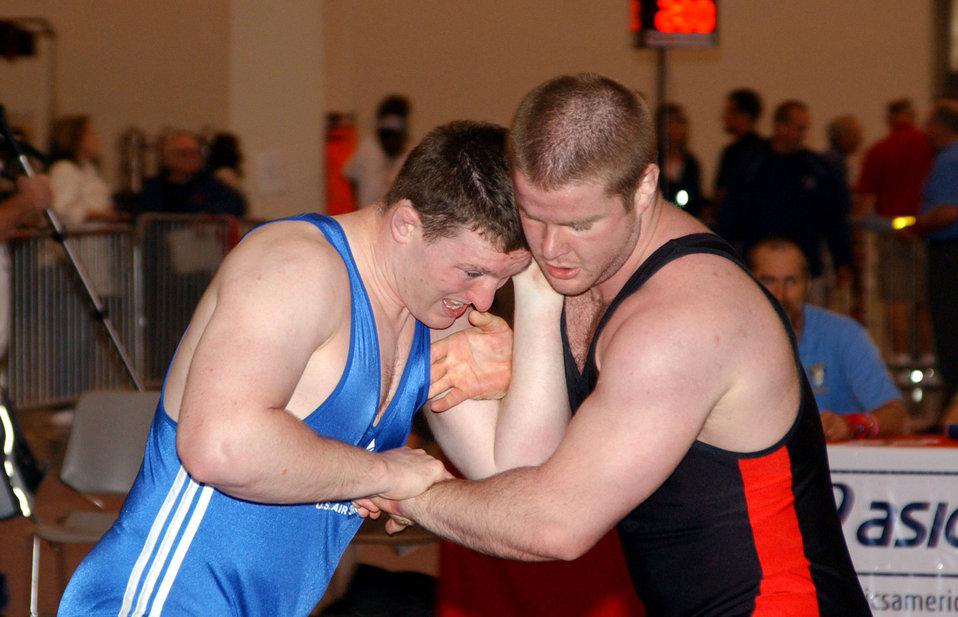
Airmen earn silver, bronze in wrestling championship

Brenden Mclean (left) matches up against Justin Ruiz in a Greco-Roman style match during the U.S. Wrestling Nationals April 7 in Las Vegas. In McLean's first time wrestling for the Air Force team, he took 8th place overall for his 96-kilogram (211-pound) weight class.